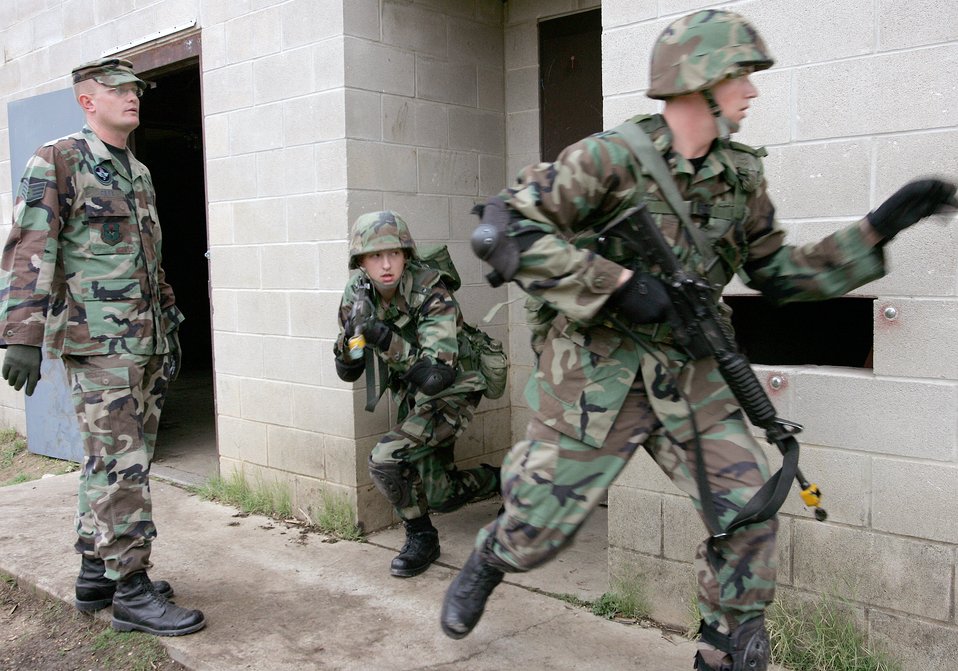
Urban training

Staff Sgt. Adam Riley observes students leaving a building during urban training at Camp Bullis, Texas, Tuesday, March 7, 2006. Sergeant Riley is an instructor with the 343rd Training Squadron at Lackland Air Force Base, Texas.